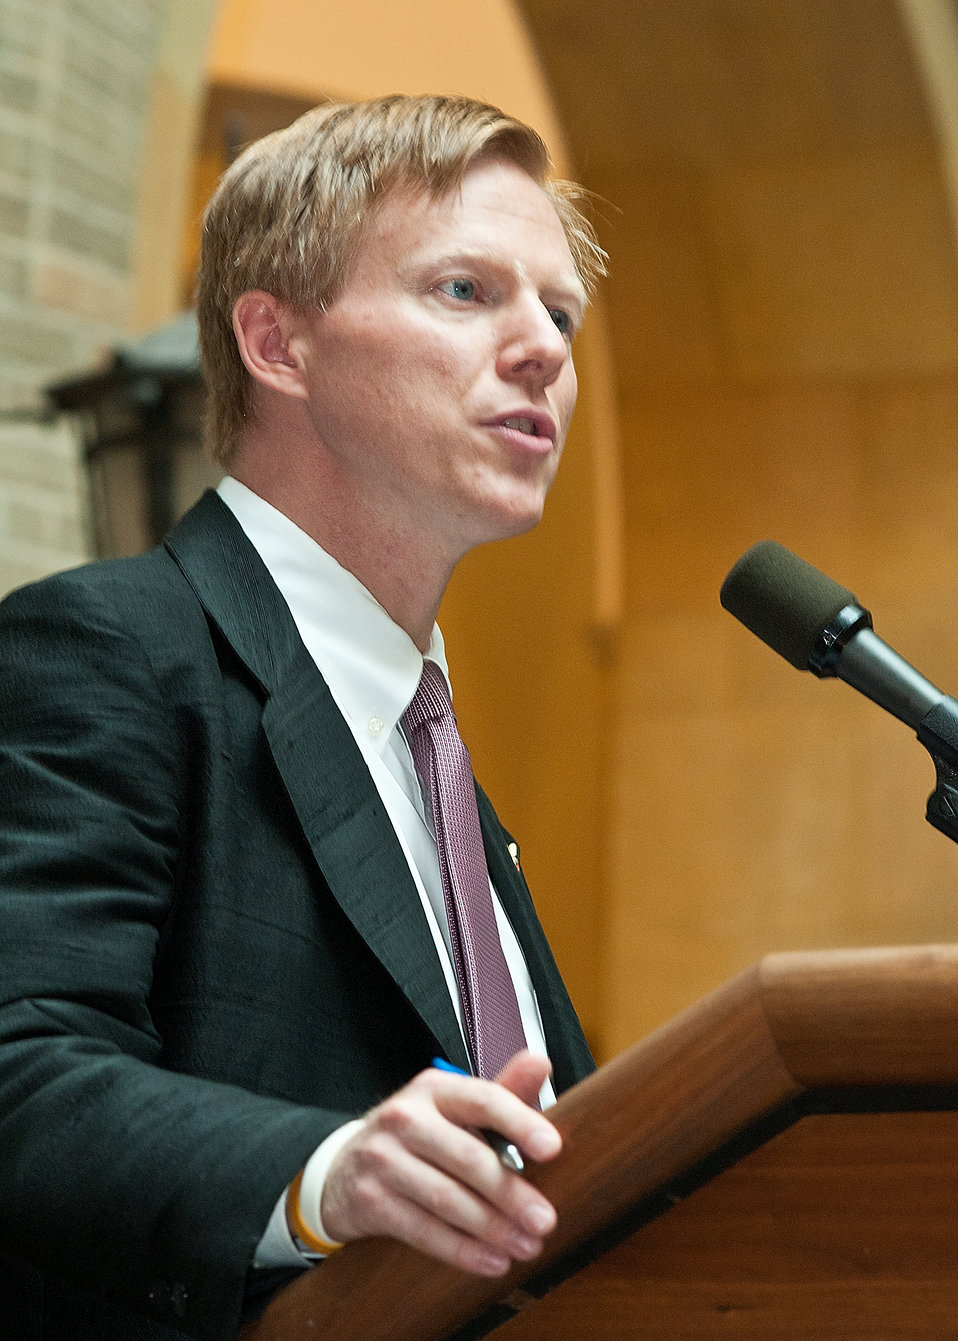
Max Finberg, Director, Office of Faith Based and Neighborhood Partnerships welcomes U.S. Department of Agriculture employees to the kick-off of the USDA 2011 Combined Federal Campaign “Compassion of Individuals, Power of Community” in Washington, DC, on Wednesday, September 21, 2011. The theme of the 2011 campaign is “Celebrating 50 Years of Caring, Serving and Giving.”